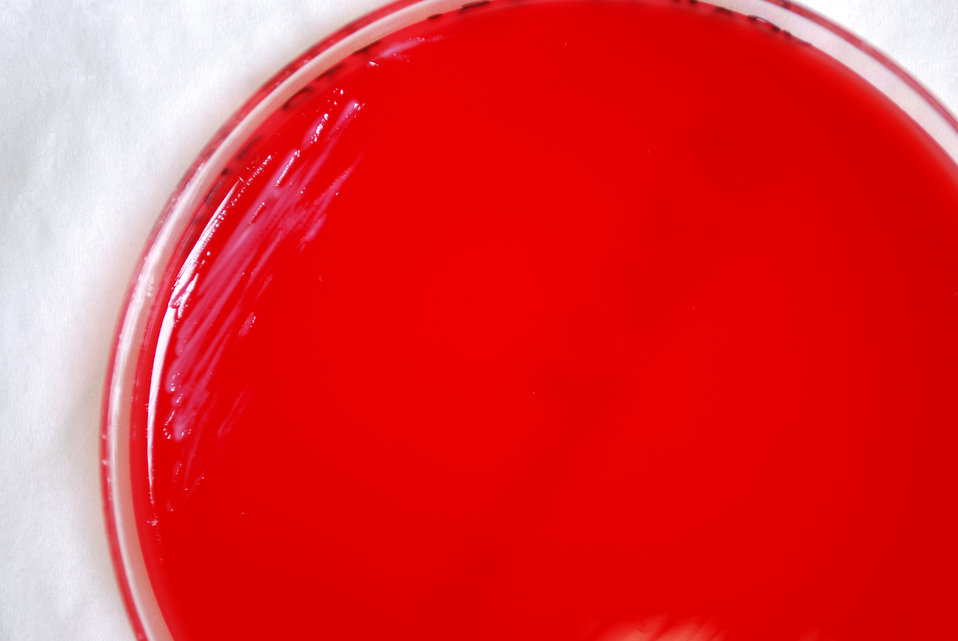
An enlarged view of PHIL 12211, this photograph depicts the colonial morphology displayed by Gram-negative Yersinia pestis bacteria, which was grown on a medium of sheep's blood agar (SBA), for a 24 hour time period, at a temperature of 25�C.What are the signs and symptoms of plague?